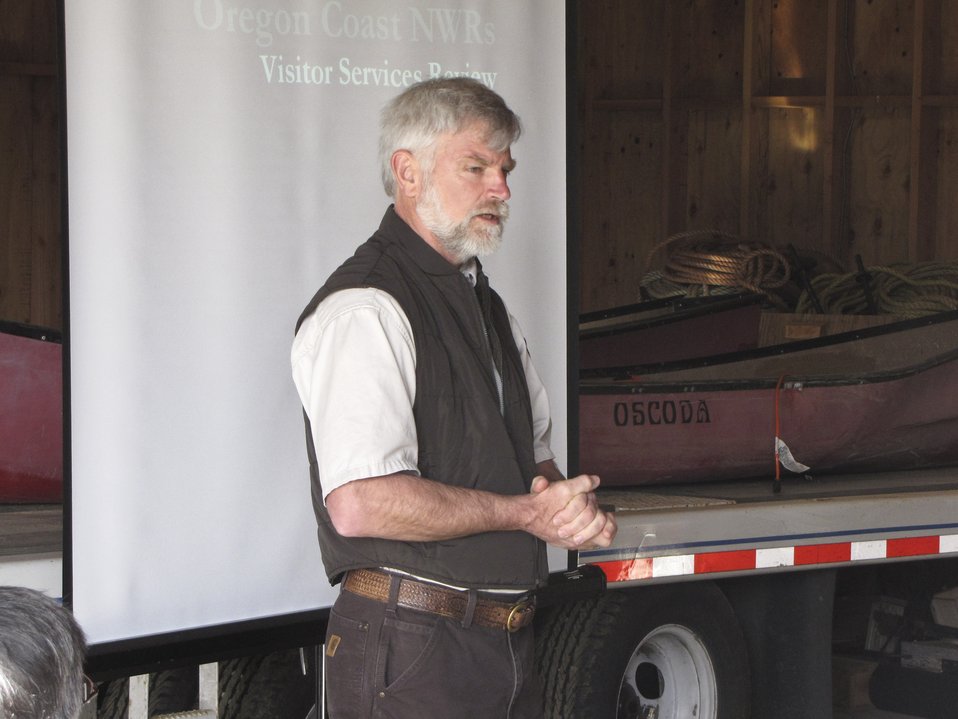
Roy Lowe, manager of the Oregon Coast National Wildlife Refuge Complex (USFWS)